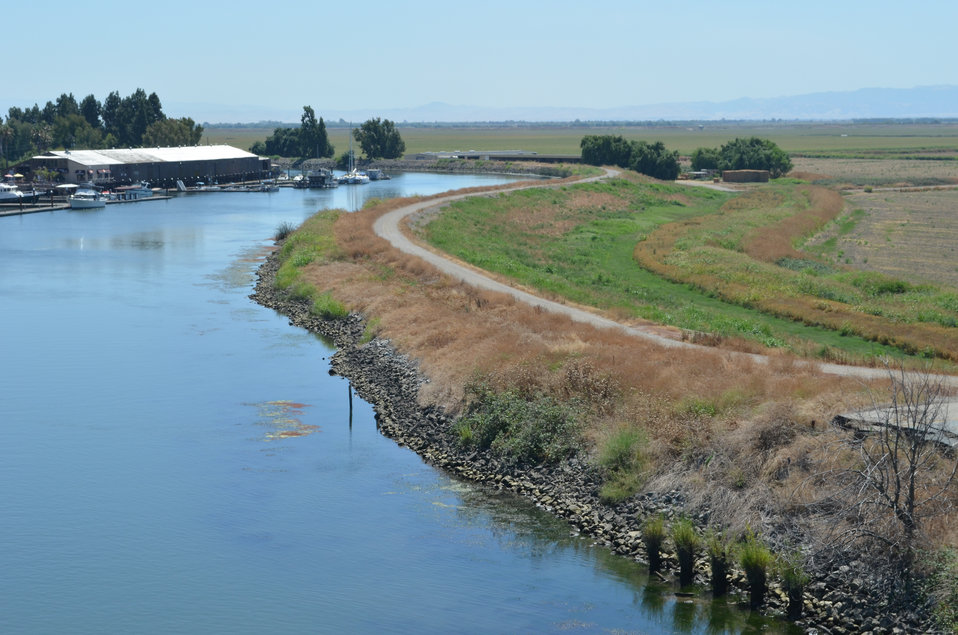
Delta levee

The water level behind a levee in California’s Sacramento-San Joaquin Delta, shown Aug. 16, 2011, is higher than the surrounding land, showing the risk of flooding throughout the region. Under the CALFED Levee Stability Program, the U.S. Army Corps of Engineers Sacramento District is studying how best to quickly fix urgent levee problems while a longer-term plan for reducing flood risk throughout the Delta is developed.